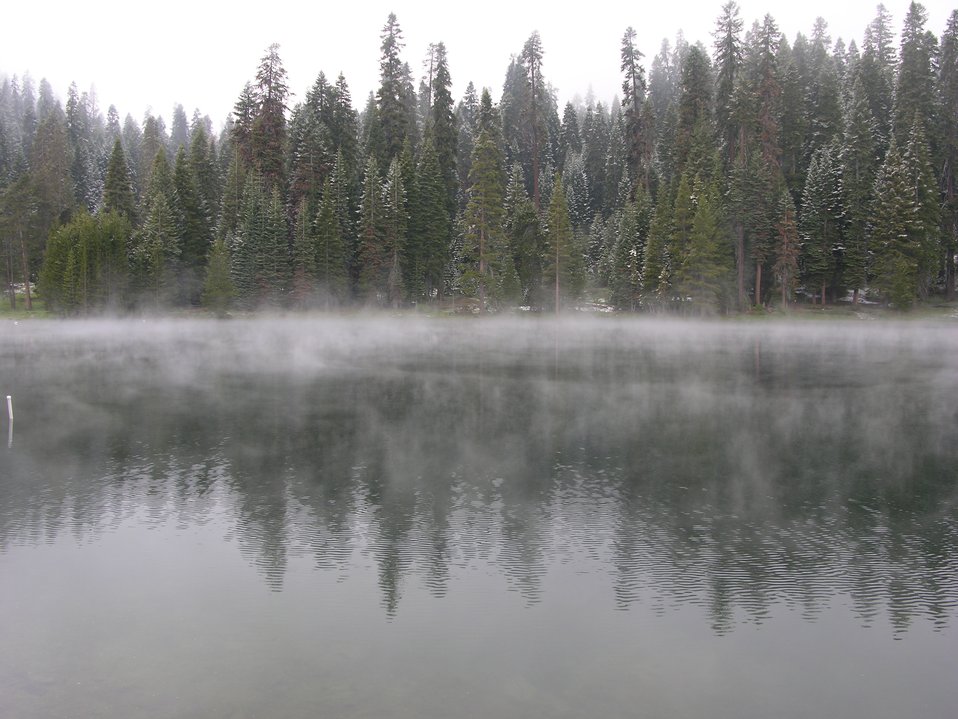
A dusting of snow with cold air over warmer water in a lake causing fog to form.